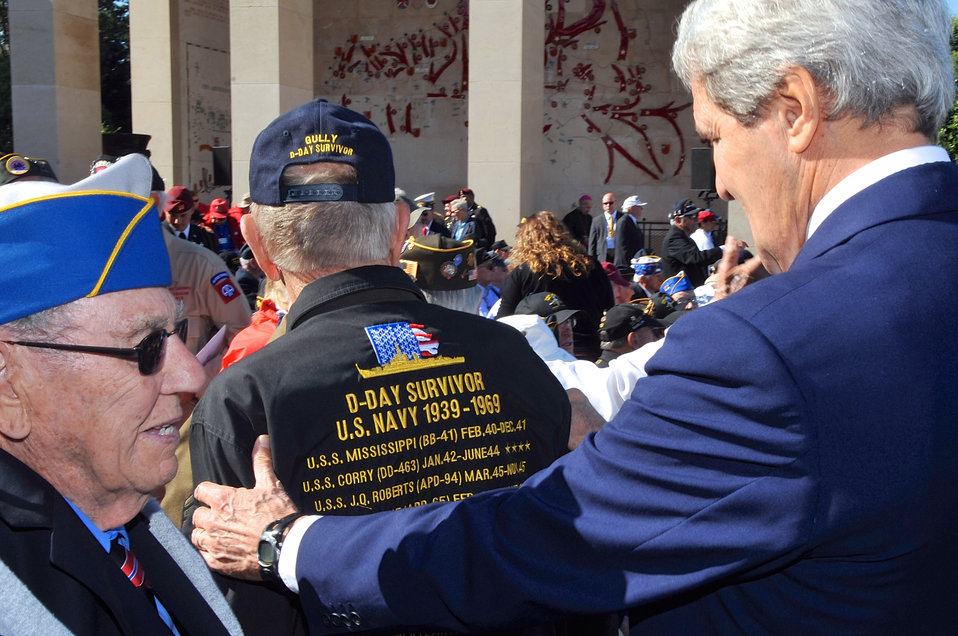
D-Day Veteran Shows Secretary Kerry a Jacket Outlining Military Career

U.S. Secretary of State John Kerry looks at a jacket recapping the career of a D-Day veteran before the 70th anniversary commemoration in Normandy, France, on June 6, 2014. State Department photo/ Public Domain]